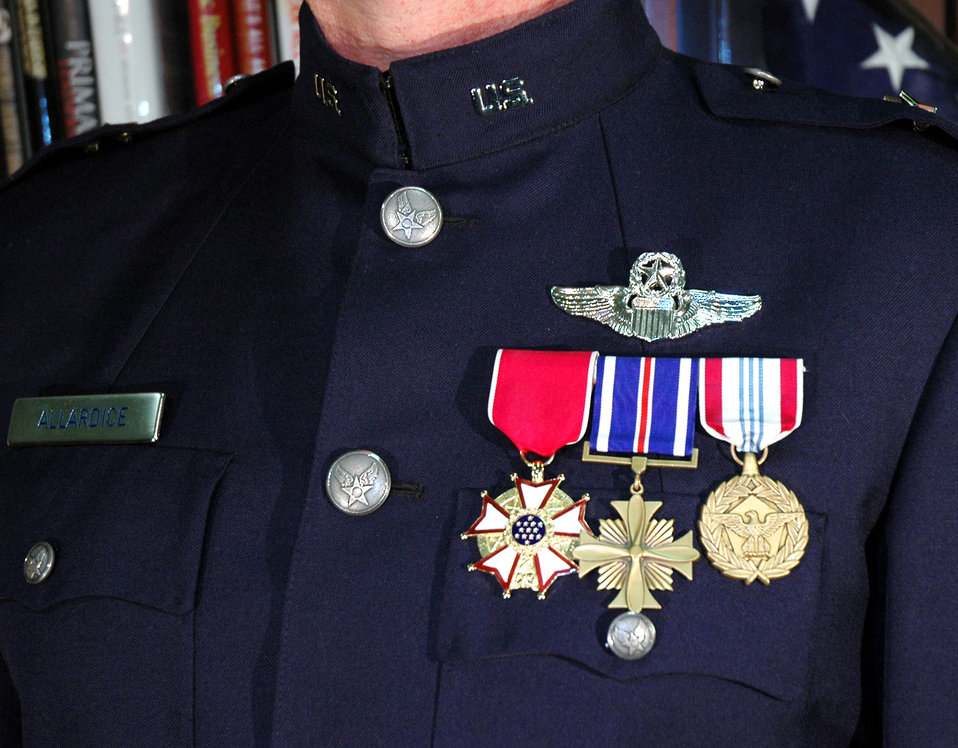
New service dress prototypes peak interest

Brig. Gen. Robert Allardice shows off a prototype of the Billy Mitchell heritage coat in the Pentagon on Monday, May 15, 2006. General Allardice is director of Airmen development and sustainment.